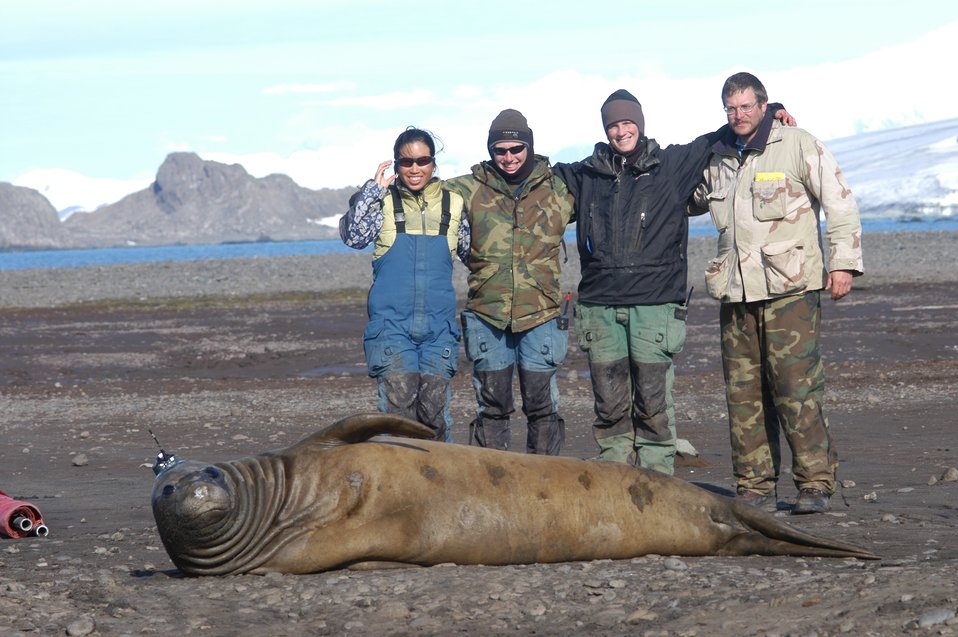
Satellite transmitter placed on head of cow elephant seal.